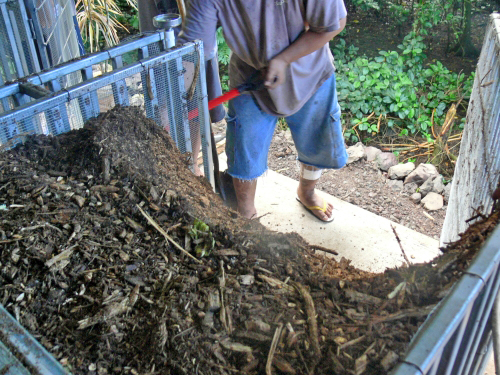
Composting Facility 29a

Farmer Sosene Asifoa’s dry-litter system has a composting bin that reduces waste-filled runoff from his farm on the island of Tutuila in American Samoa. Asifoa received funding from the U.S. Department of Agriculture’s (USDA) Natural Resources Conservation Service (NRCS) to construct dry-litter piggery facilities. Prior to building these facilities, he washed manure out of the pigs’ stalls, causing a runoff of nutrients into nearby streams and ponds.